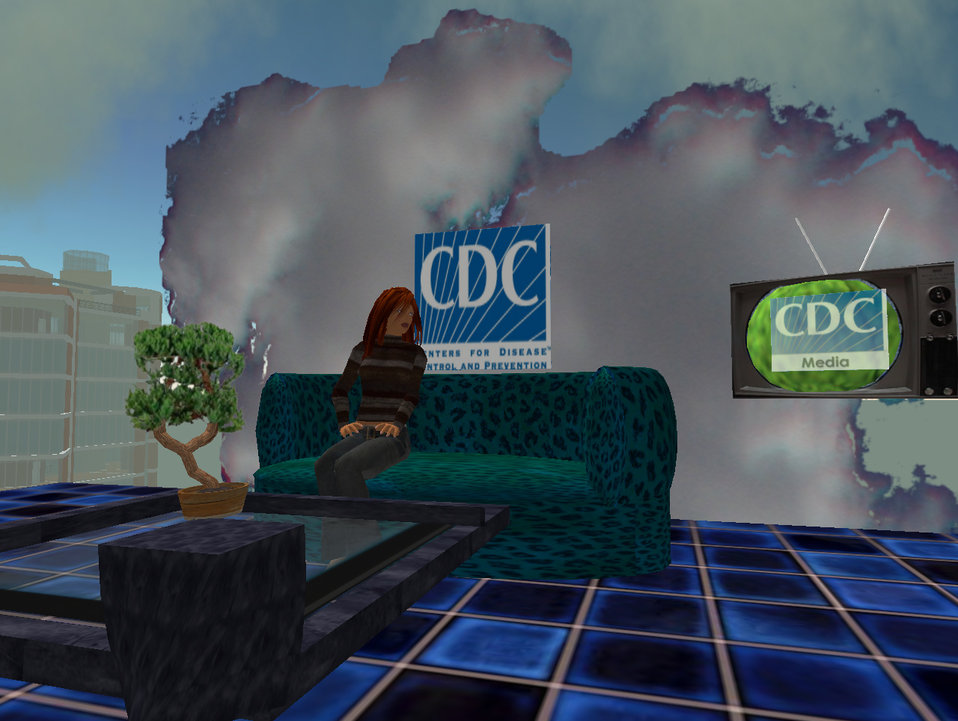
CDC's presence in the online virtual world 'Second Life' launched in August, 2006. Dr. John Anderton designed the initial CDC space using in-world, i.e., Second Life, tools, creating hyperlinks to CDC websites including the MMWR, CDC.gov homepage, CDC podcasts and the Public Health Image Library, PHIL. CDC public health posters from the first 6 decades of the CDC's existence were displayed in the 'Public Health Poster of the Week' billboard feature, which was updated weekly from August, through the end of December, 2006.